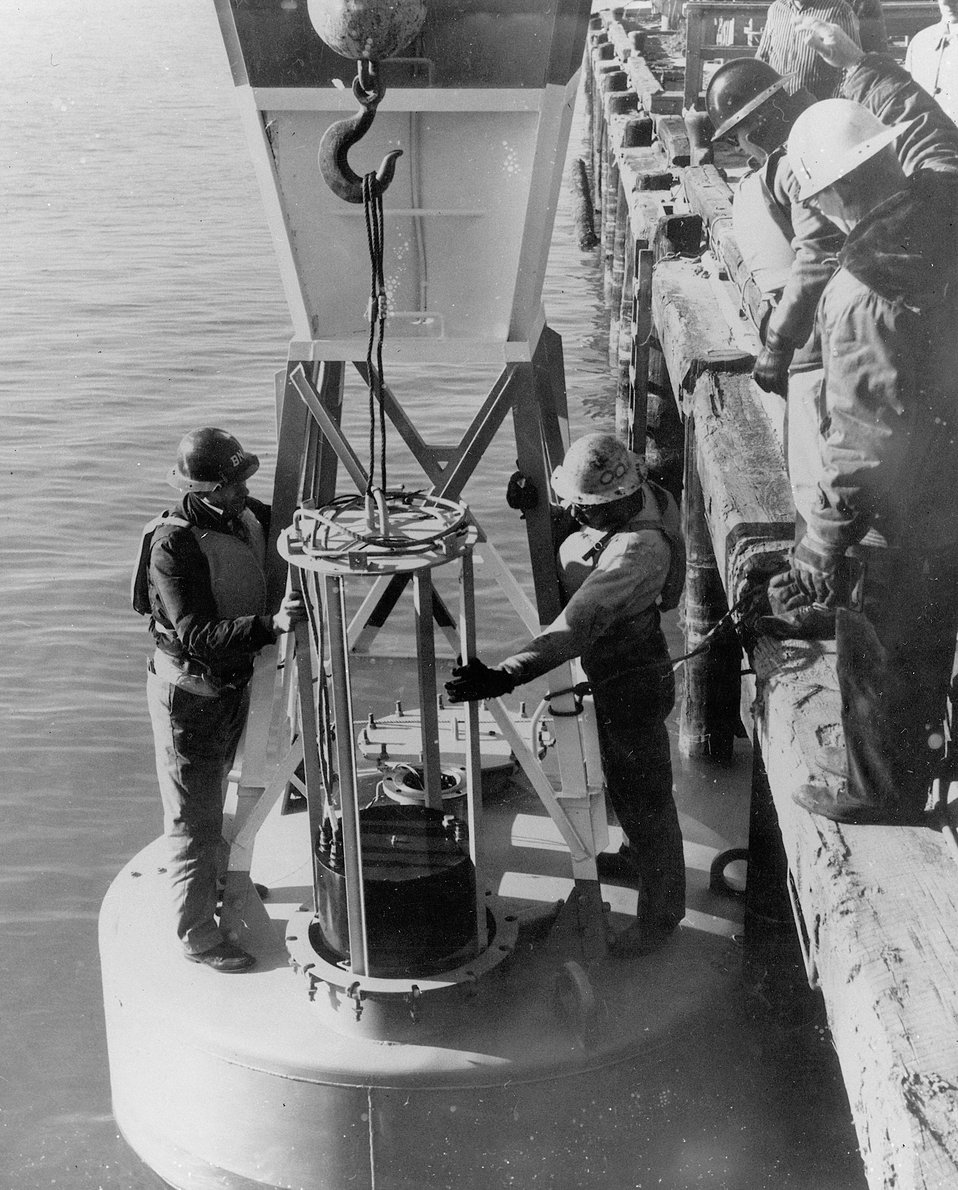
Here workmen are lowering a voltage converter and battery unit into the former battery storage battery pocket of Coast Guard's new atomic buoy alongside the dock where it was launched at the Coast Guard at Curtis Bay, December 15, 1961.